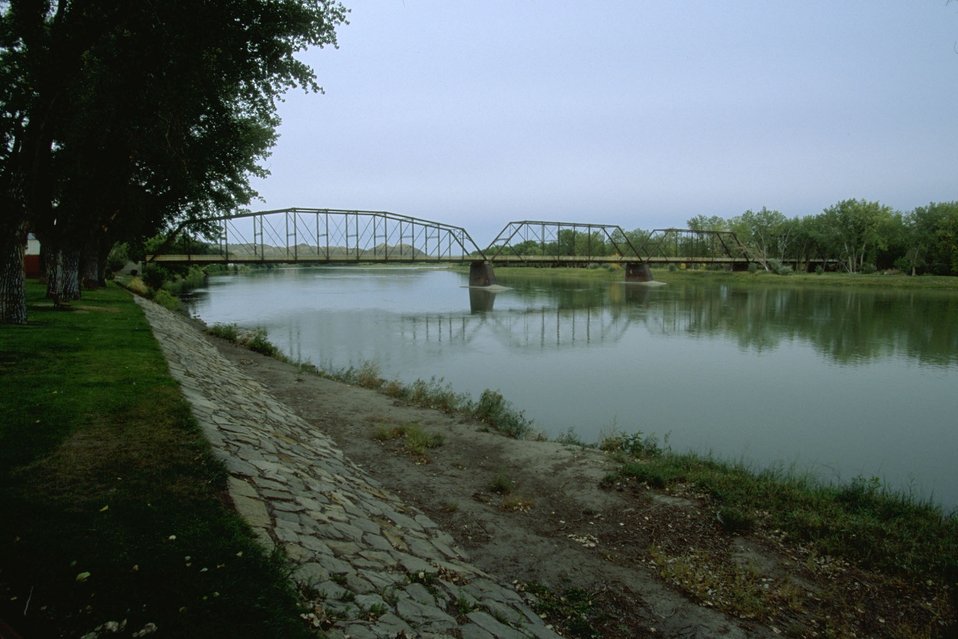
Levee and historic bridge at Fort Benton